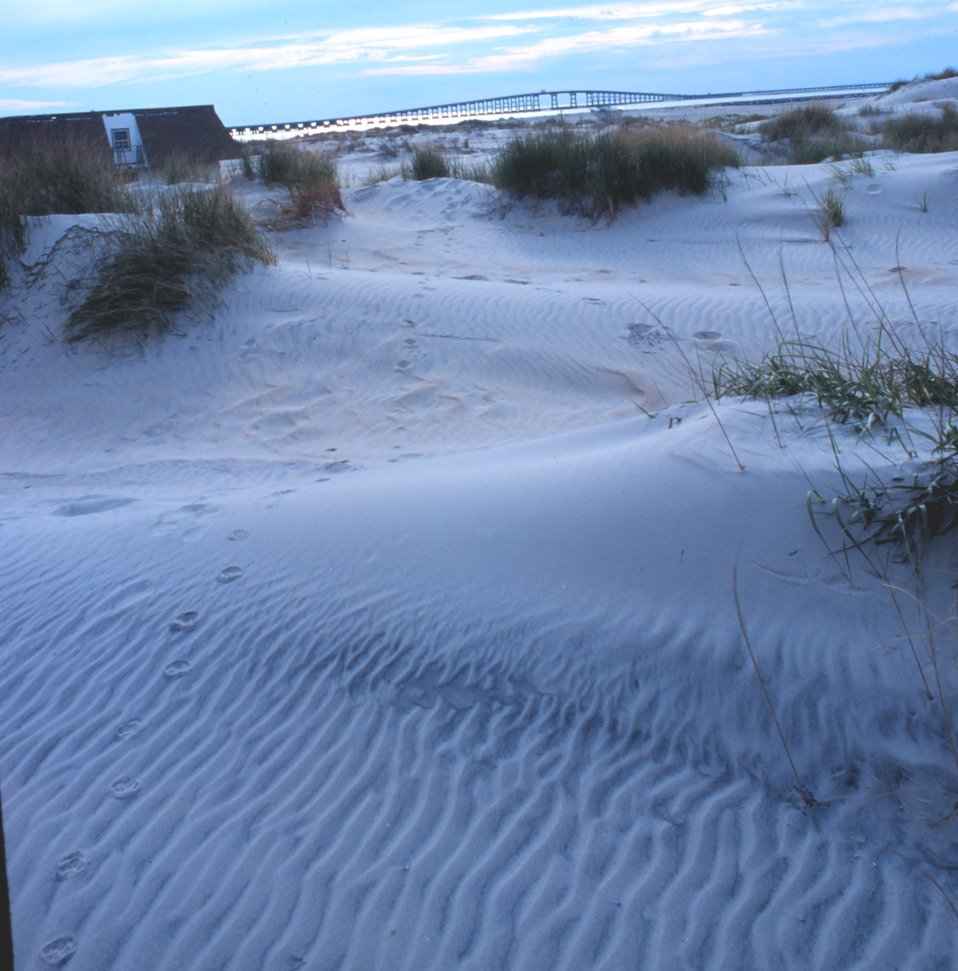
Wind-swept dunes near the abandoned Coast Guard Station